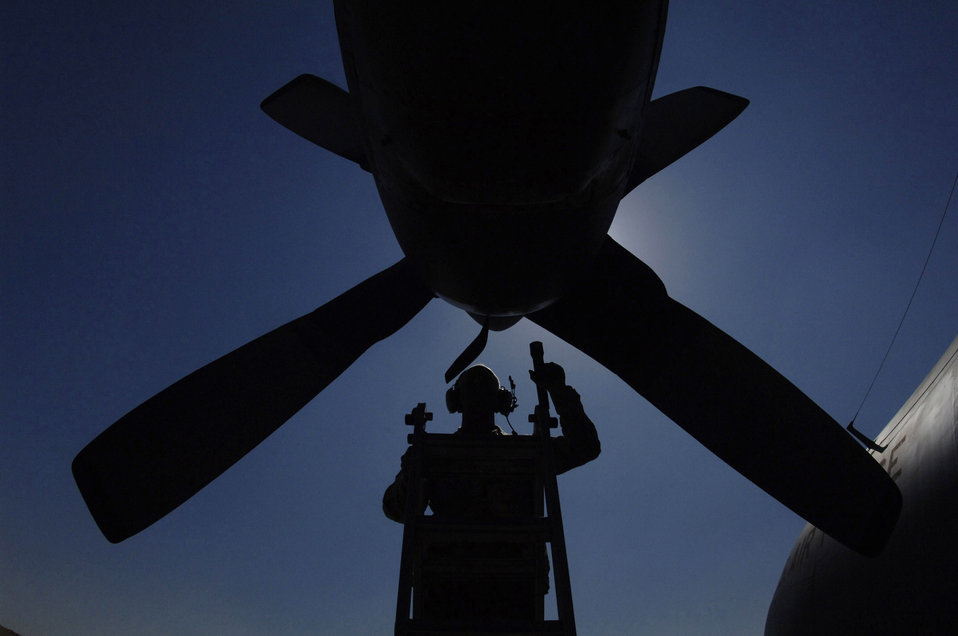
'She's running smooth'

Tech. Sgt. John Ryan conducts a post-flight inspection of one of the four turbine engines on a C-130 Hercules Jan. 25 in Southwest Asia. Sergeant Ryan is a 746th Aircraft Maintenance Unit crew chief.